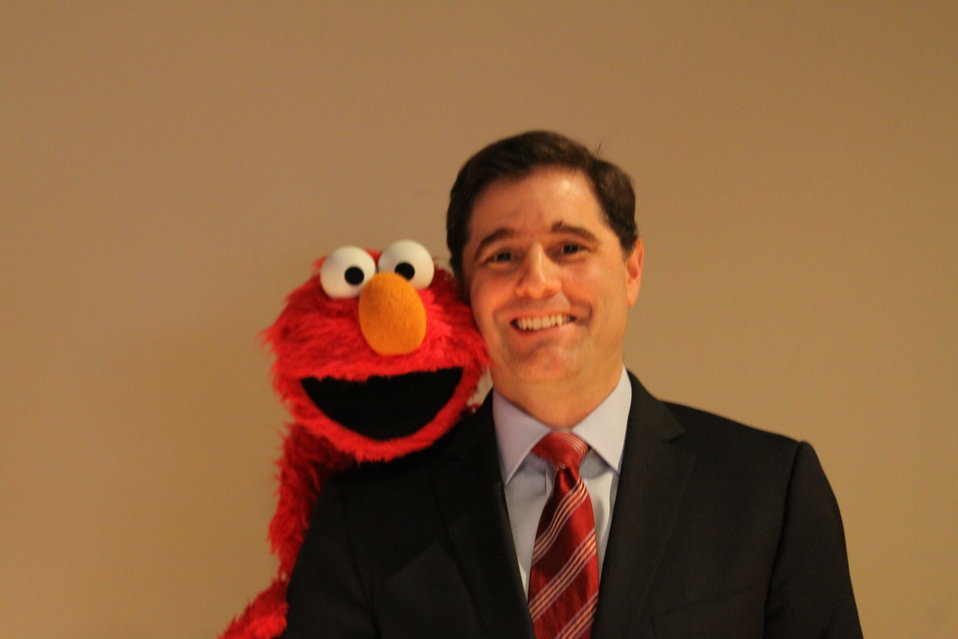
March 12, 2010- Smithsonian Broadband with Elmo